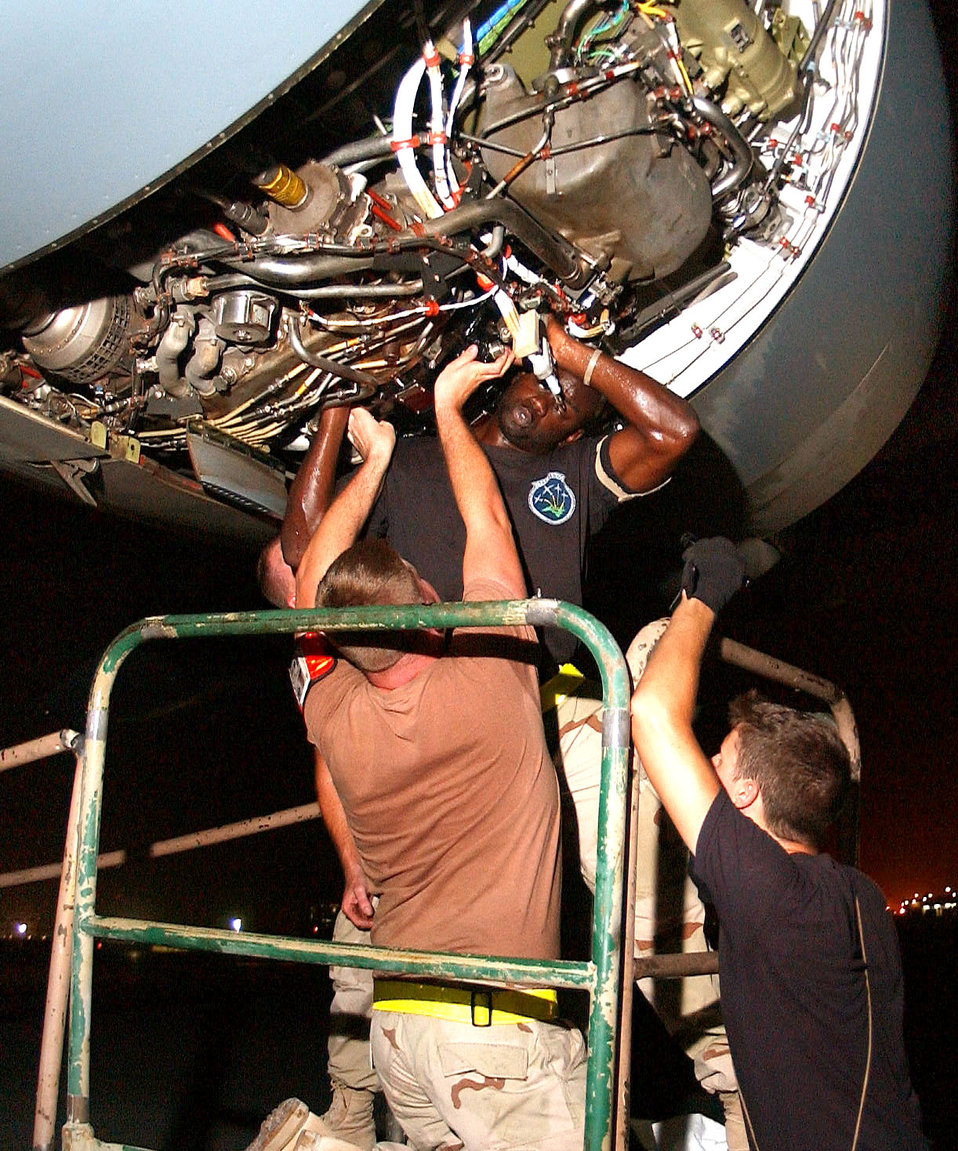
Airmen support Soldiers, Marines with up-armor kits

SOUTHWEST ASIA -- Staff Sgt. Rushad Stroman (center) get help from (from left) Airman 1st Class Gatlin Rowland and Senior Airman Matt Smith as they replace an integrated drive generator in a C-17 Globemaster III engine. The C-17s fly around-the-clock to get Humvees and up-armor kits to forward-deployed Soldiers and Marines. The Airmen are maintainers with the 8th Expeditionary Air Mobility Squadron at a forward-deployed location.